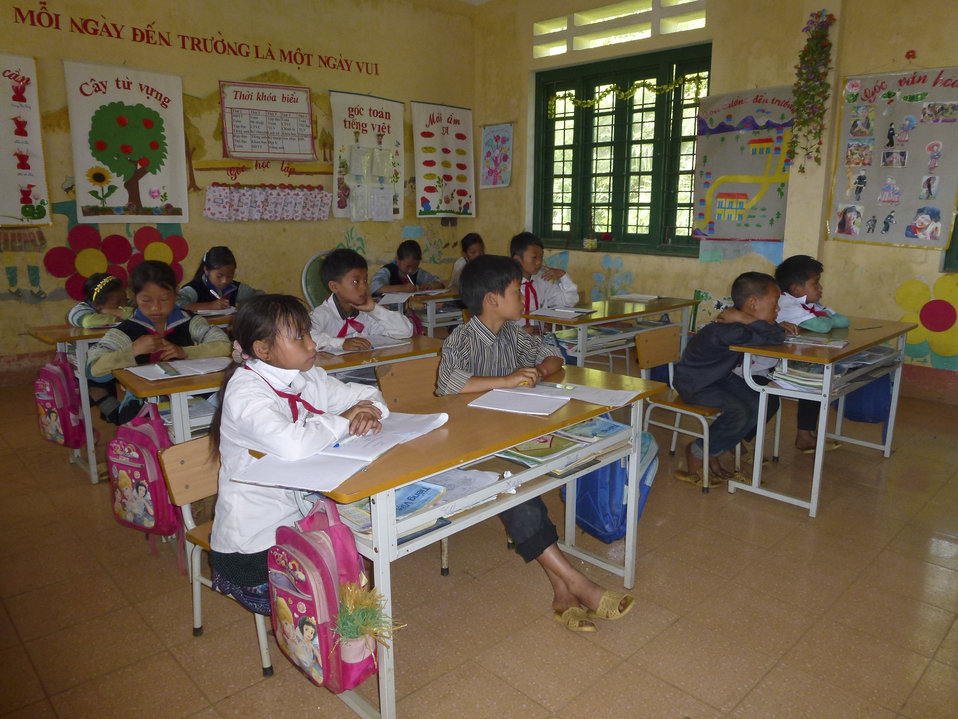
USAID supports deworming medication for school children in Bat Xat district of Lao Cai province

May 14, 2014.